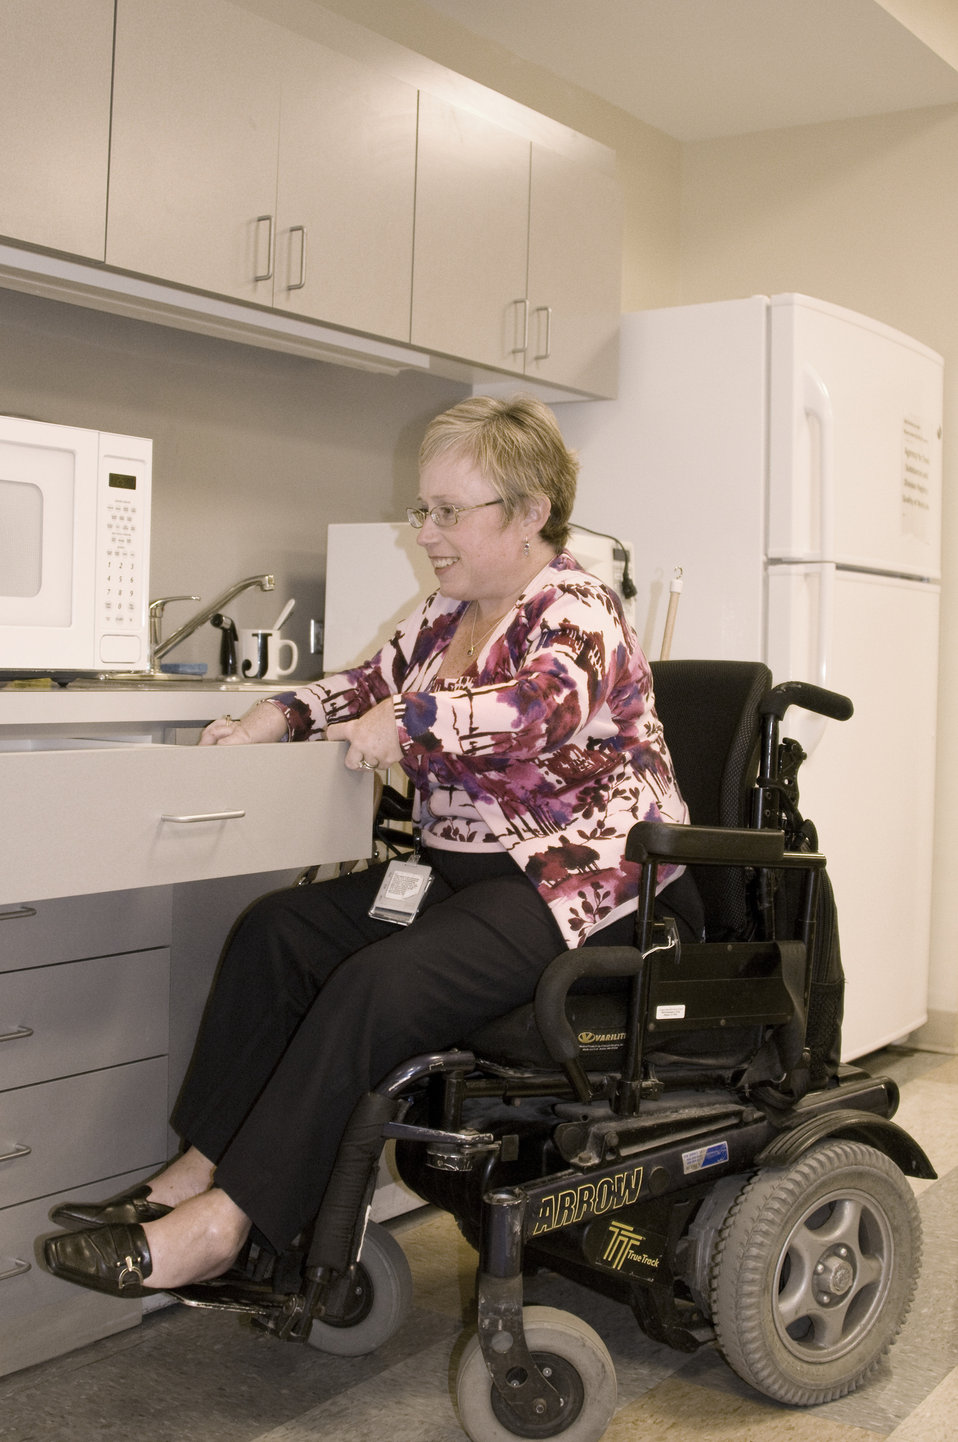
This woman who was seated in her wheelchair, was photographed in this kitchen setting while opening a cabinet drawer. Note that the height of the drawer was situated in a highly-accessible level to all who would need to place, or obtain contents from this location. You can see that the microwave oven, and even the overhead cabinets were accessible to this person, and therefore, universally-accessible to all.